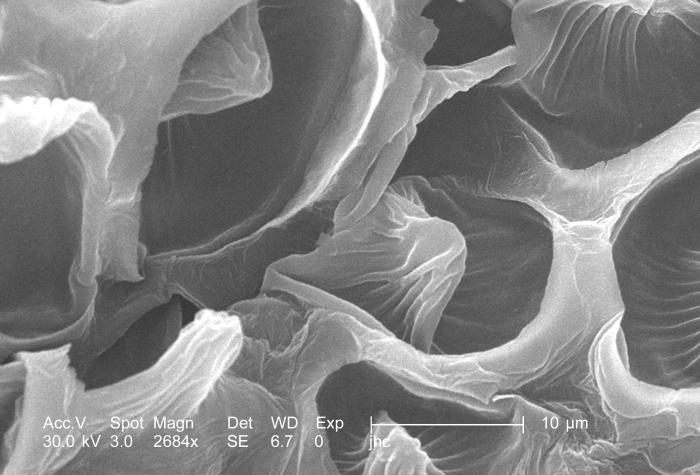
Under a high magnification of 2684x, this scanning electron micrograph (SEM) revealed some of the ultrastructural details seen on the surface of a "crimson clover", Trifolium incarnatum flower petal. This clover was blooming during the month of March on the grounds of the Centers for Disease Control headquarters in Atlanta, Georgia. Being that flower petals are actually modified leaves, the highly textured surface, composed of many cavitations and protuberances, are actually modification of the plant's leaf morphology, such as the leaf's stomata, which are the leaf pores through which the plant respires.